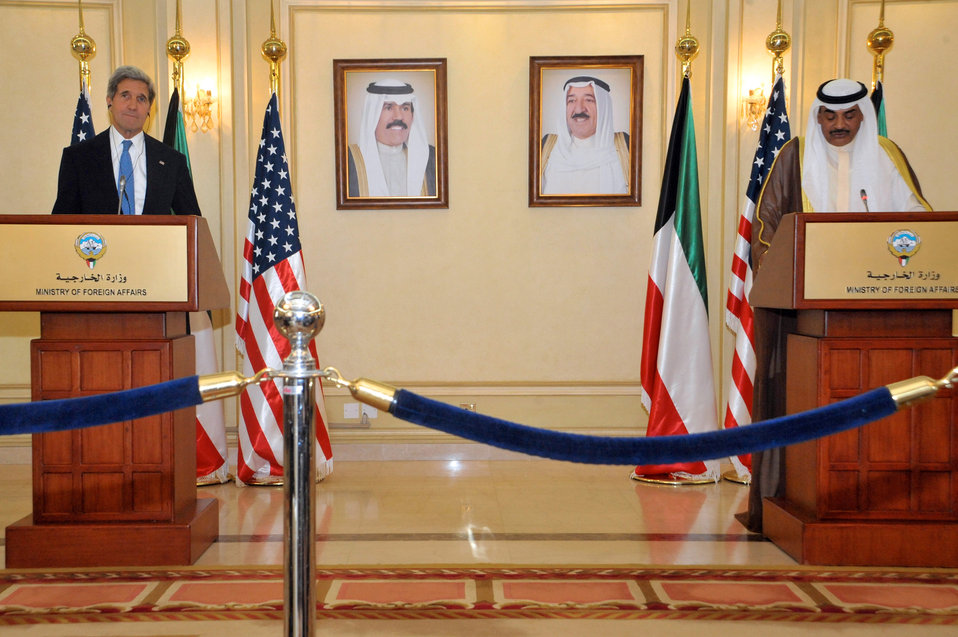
Secretary Kerry and Kuwaiti Deputy Prime Minister and Foreign Minister Sheikh Sabah Al-Khalid Hamad Al-Sabah Address Reporters

U.S. Secretary of State John Kerry and Kuwaiti Deputy Prime Minister and Foreign Minister Sheikh Sabah Al-Khalid Hamad Al-Sabah hold a joint news conference after meeting in Kuwait City, Kuwait, on June 26, 2013.